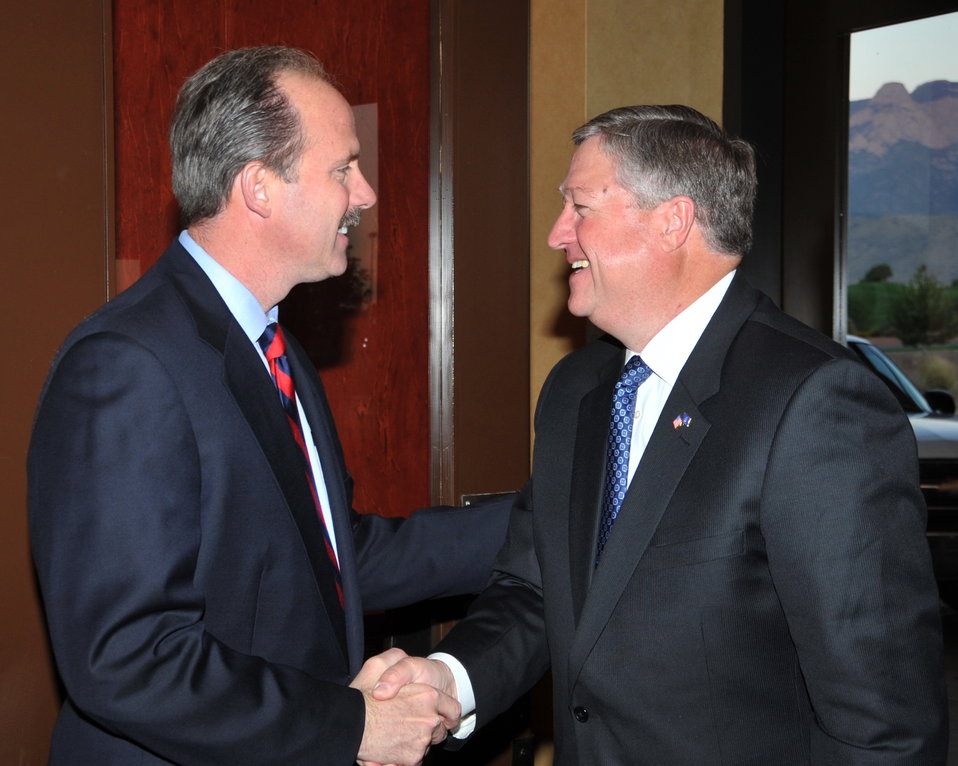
SECAF visits Kirtland Air Force Base, N.M.

Secretary of the Air Force Michael Donley, while visiting the men and women of Kirtland Air Force Base, N.M., is greeted by Richard Berry, mayor of Albuquerque, as he arrives downtown for the Albuquerque Chamber of Commerce Banquet Oct 13, 2010.